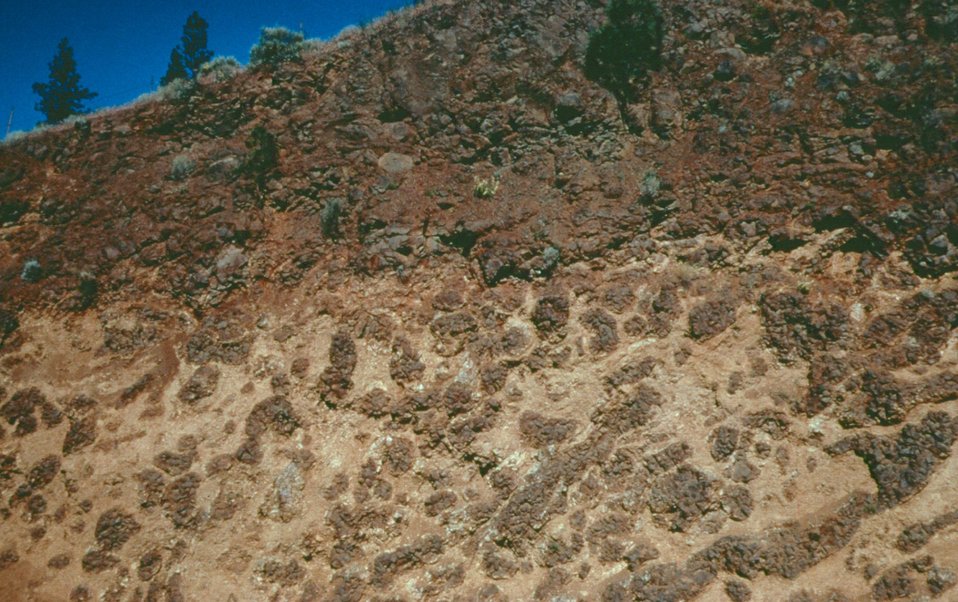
Pillow lava Four Rivers LSRD Lower Snake River District